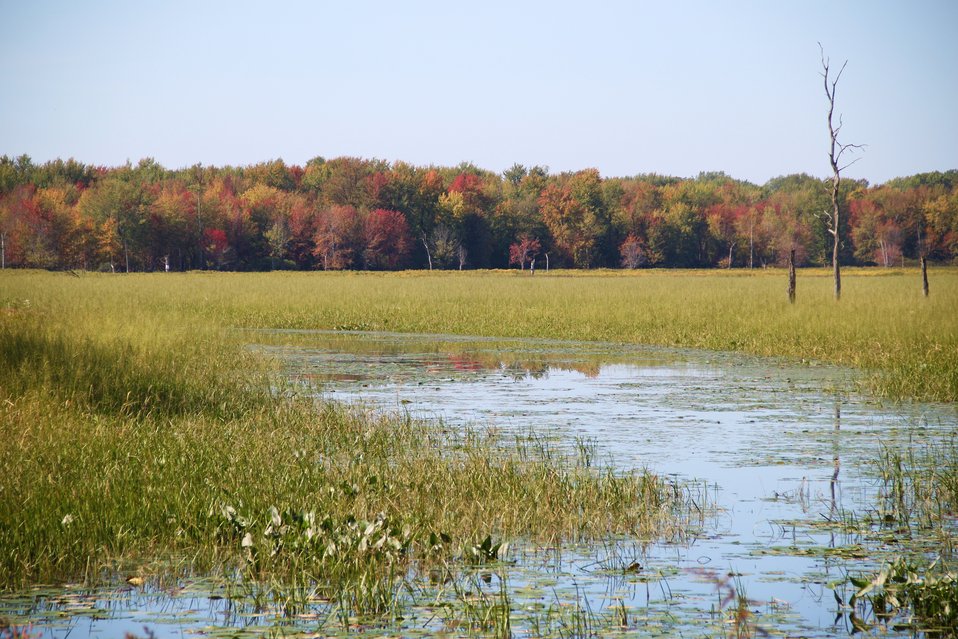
Cranberry pool 2011 (1)

Cranberry wetland management unit at Missisquoi National Wildlife Refuge with fall foliage.